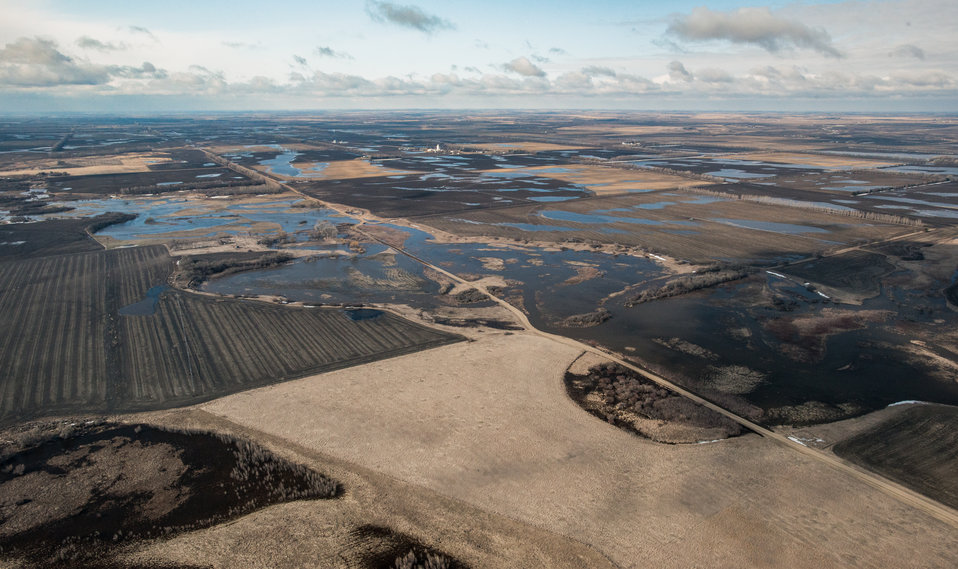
Proposed Dam site #10, on Turtle River Watershed in Grand Forks County, ND, part of the Red River basin, on Wednesday, May 1, 2013. To learn about the Red River Basin Initiative, see www.mn.nrcs.usda.gov/news/features13/RRBI.html.